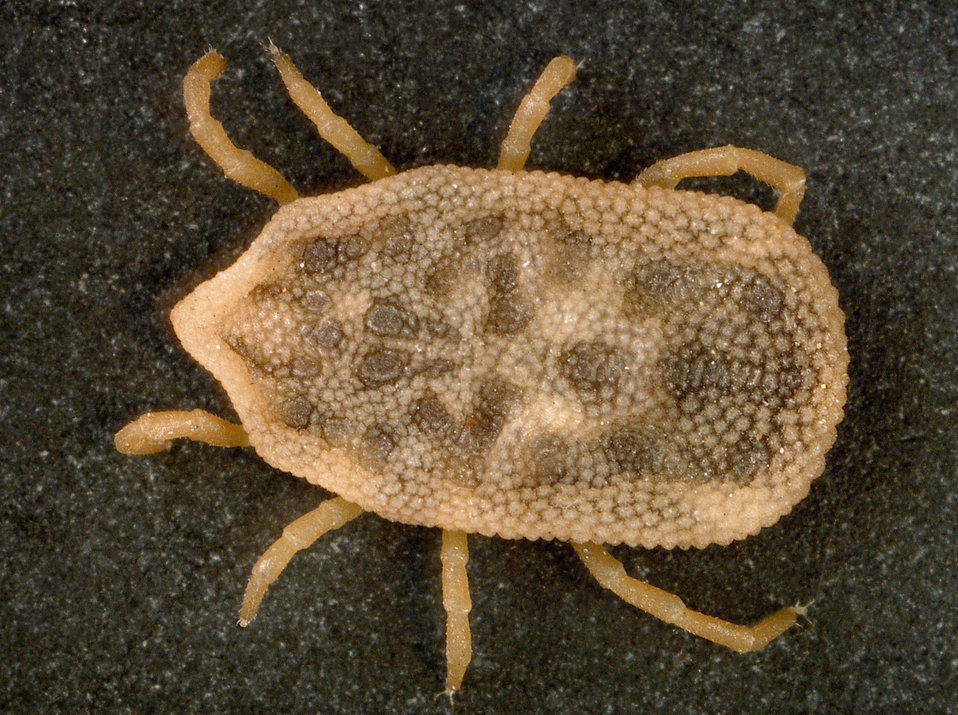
This is a dorsal view of the 'soft tick' Carios kelleyi, formerly Ornithodoros kelleyi, or the 'Bat Tick'.